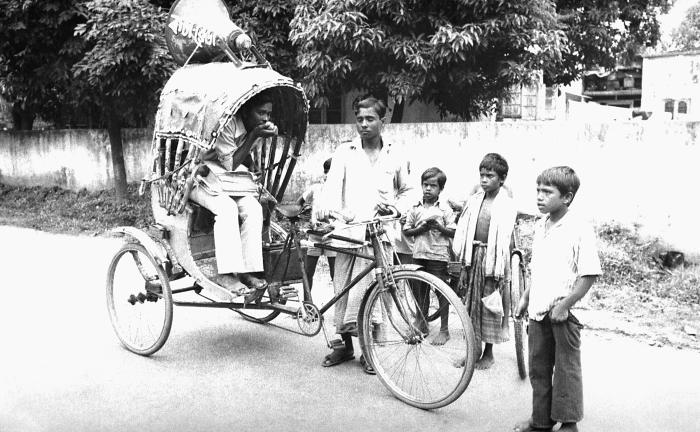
This 1975 photograph depicted two local Bangladesh smallpox eradication team volunteers as they were getting the word out throughout a village community by riding about on a rickshaw, atop which was mounted a megaphone horn. The message included information about the reward paid for reporting a confirmed smallpox case, which was 250 Taka. The Taka is the official currency of Bangladesh, and is produced in 8 different denominations. The last known case of naturally occurring smallpox, a young girl named Rahima Banu, was reported by an 8 year old girl named Bilkisunnessa, who was paid her 250 Taka reward. All rewards were handed out in a public place.